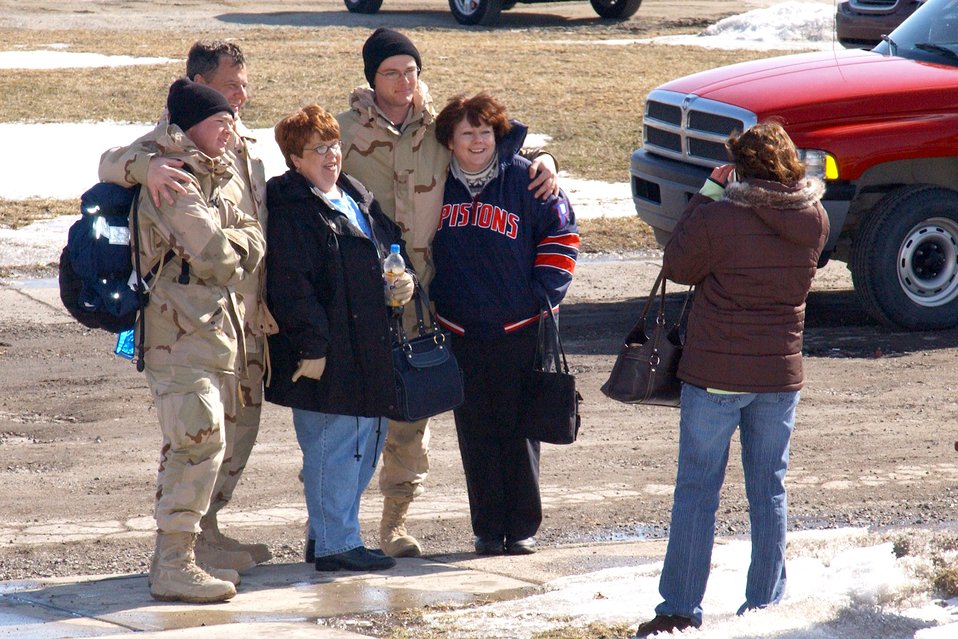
Michigan Air Guard returns from Iraq deployment

The Klemanski family poses for a photo March 5 at Selfridge Air National Guard Base, Mich. Tech. Sgt. Gary Klemanski, and sons Senior Airmen Jason and David Klemanski were deployed together to Balad Air Base, Iraq, for 45 days.